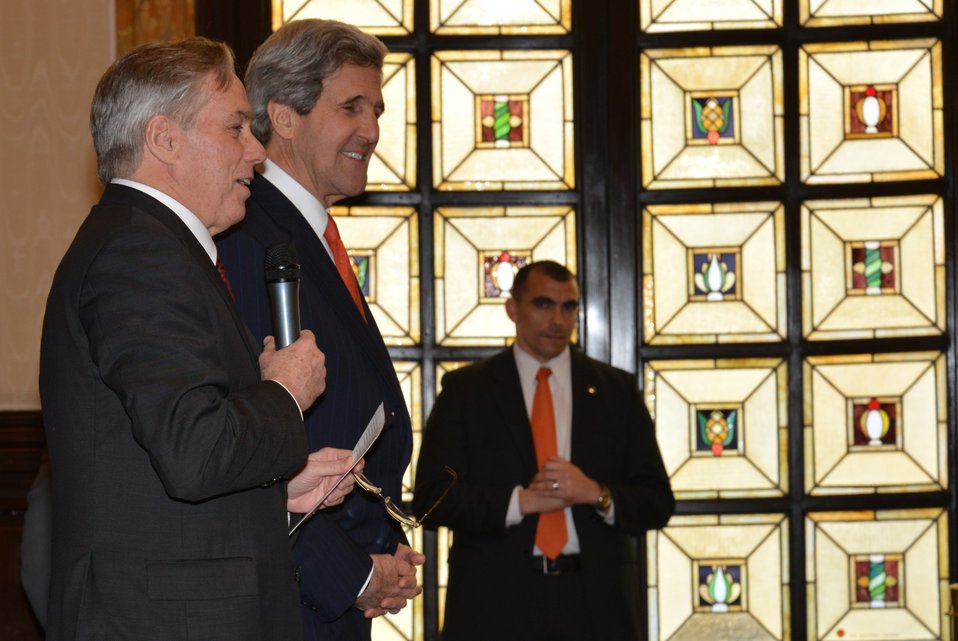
Ambassador Thorne Welcomes Secretary Kerry to Tri-Mission Rome

U.S. Ambassador to Italy David Thorne welcomes U.S. Secretary of State John Kerry to the staff and families of Tri-Mission Rome -- the U.S. Embassy in Rome, Italy; the U.S. Embassy to the Holy See; and the U.S. Mission to the UN Agencies -- in Rome, Italy, on February 28, 2013.